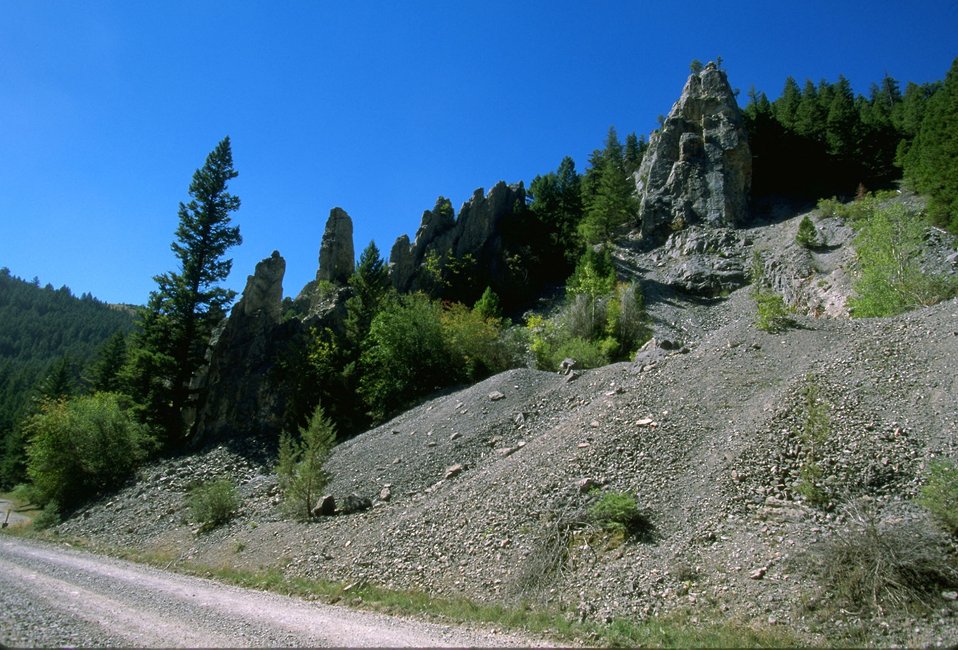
Rattler Gulch-Limestone Cliffs ACEC